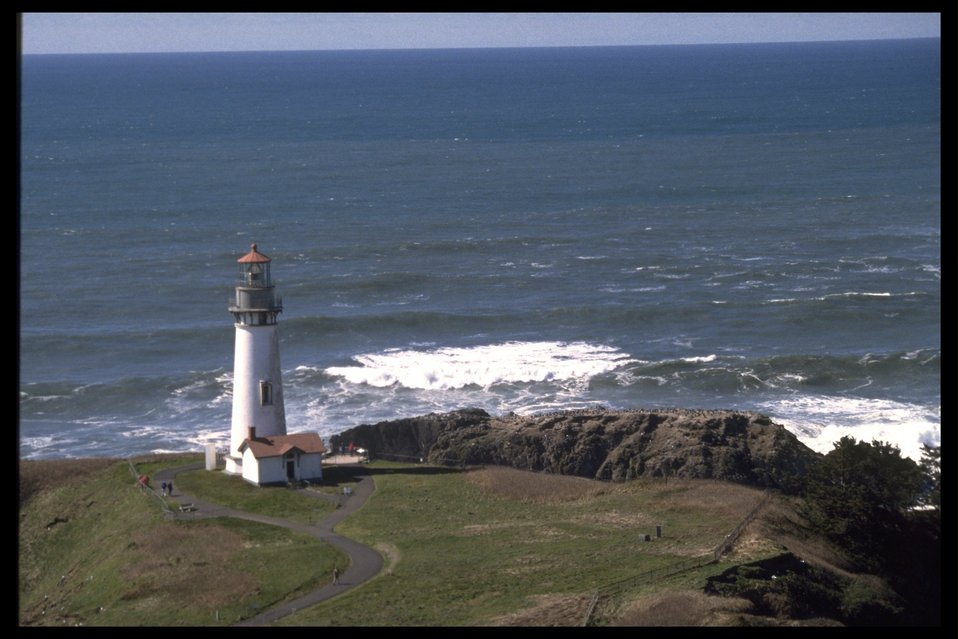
Yaquina Head Lighthouse.